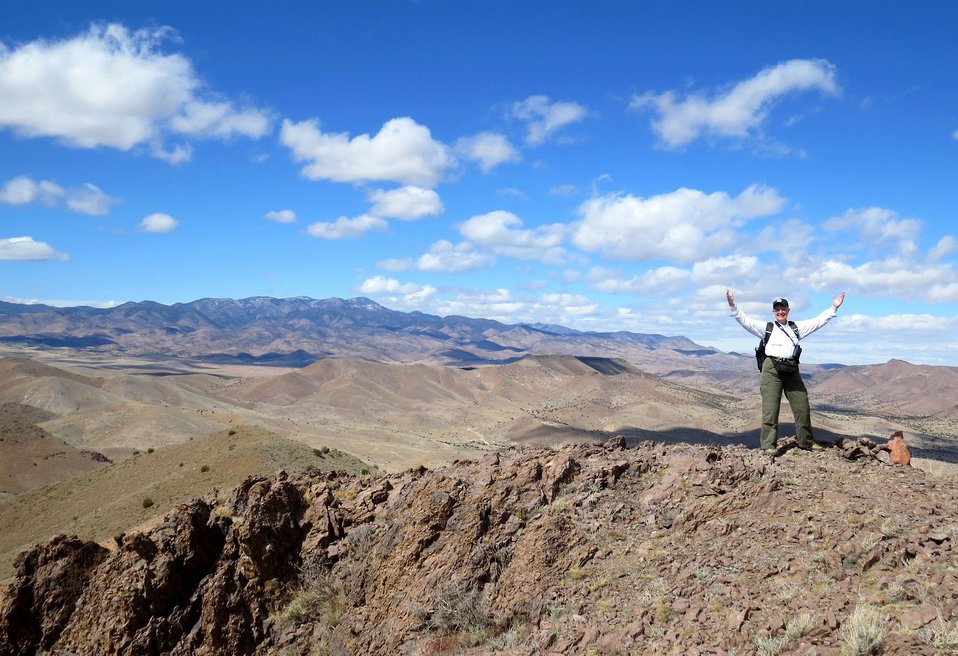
Bosque del Apache Refuge

Atop Chupadera Peak in the Chupadera Wilderness at Bosque del Apache National Wildlife Refuge, NM.